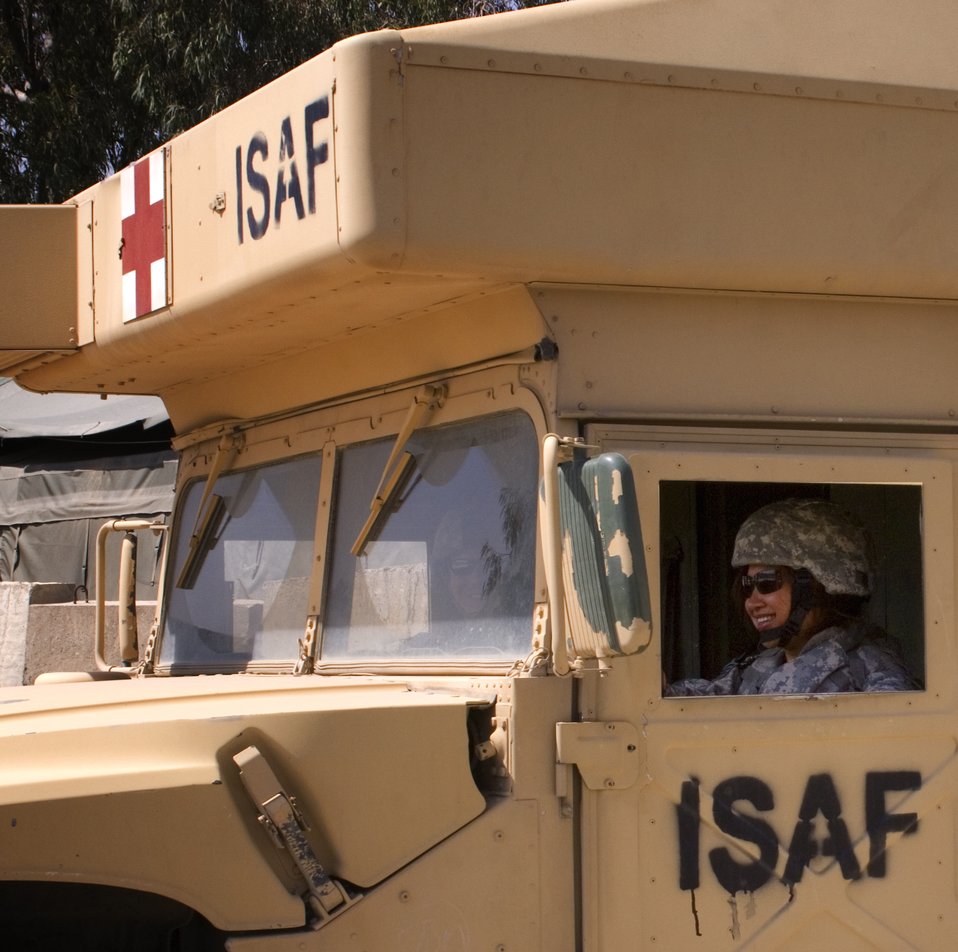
Airman helps run Afghan medical clinic

Staff Sgt. Pauline Hoyla transports local Afghans from the main gate to the hospital at Forward Operating Base Salerno, Afghanistan, Aug. 29. Five days a week, she oversees administration of a local national medical clinic run jointly by American and Afghan doctors. Sergeant Hoyla is an aeromedical service craftsman deployed from Scott Air Force Base, Ill.